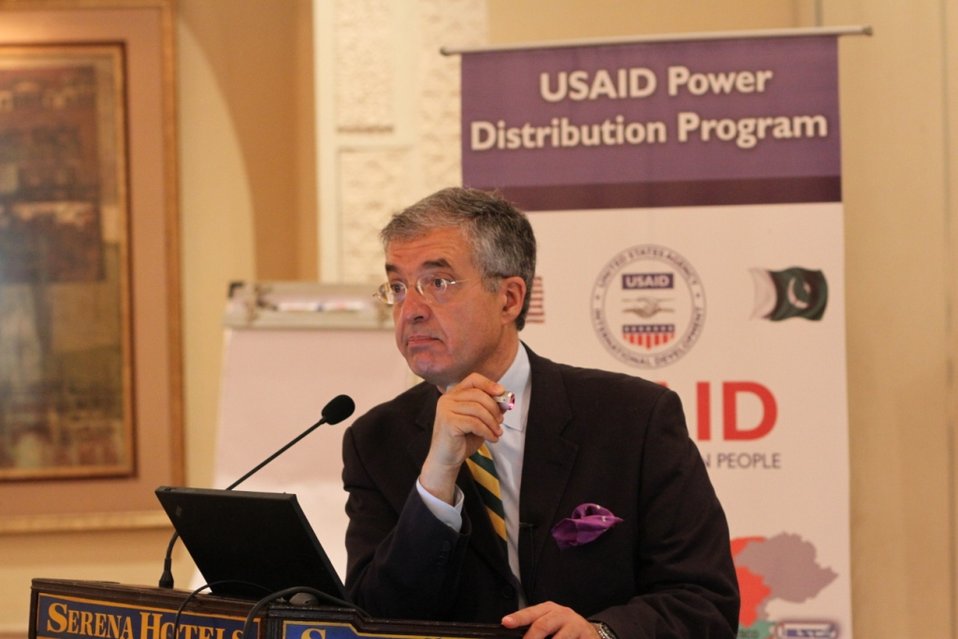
Workshop on Cost of Service and Tariff Design Study

Islamabad, June 7, 2012: The USAID Power Distribution Program today held a workshop for DISCOs on Cost of Service and tariff design. This workshop is a continuation of a series of capacity-building workshops through which the Power Distribution Program is providing training to DISCO employees in conducting Cost of Service (CoS) studies as well as providing guidance on tariff setting principles.